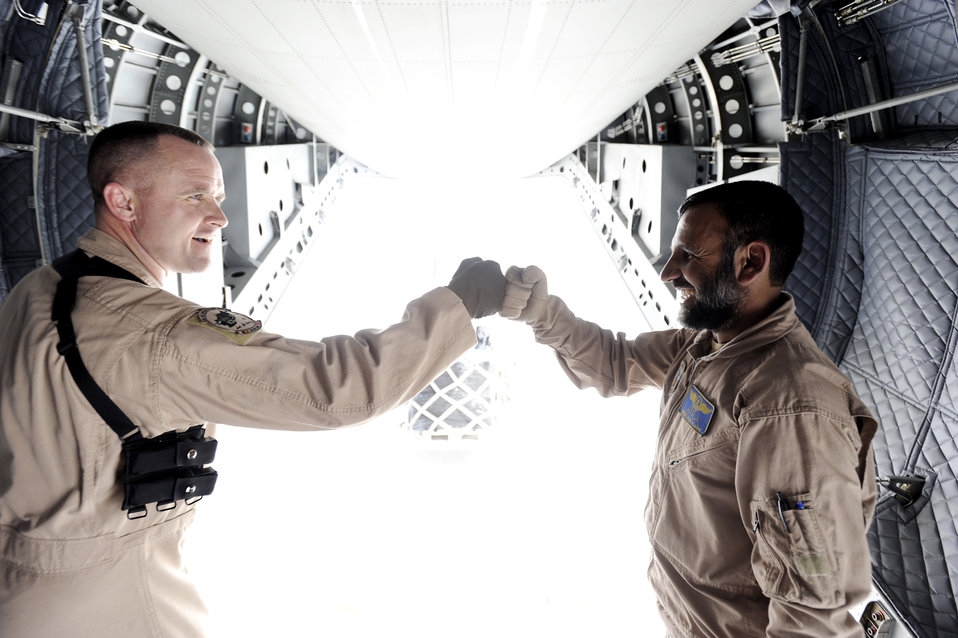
Airmen train Afghan C-27 loadmaster

Master Sgt. Chris Ringland and Afghanistan National Army Air Corps Master Sgt. Sheer Aqa Karimi congratulate each other after successfully unloading the missions cargo to its detestation March 28, 2010, at Camp Bastion, Afghanistan. Sergeant Karimi is a C-27 Spartan loadmaster, and Sergeant Ringland is a 438th Air Expeditionary Advisory Group standards and evaluation loadmaster.